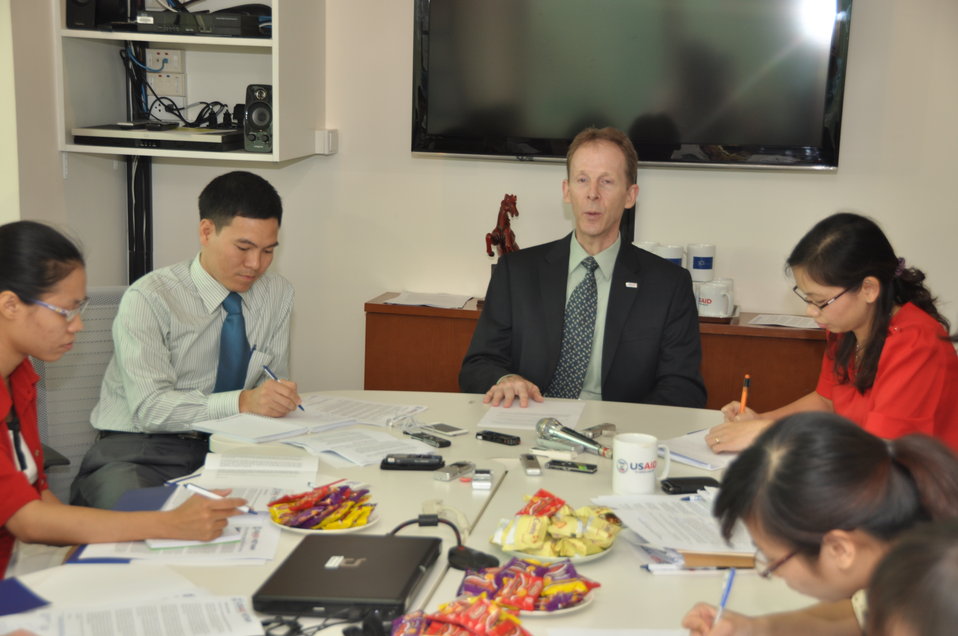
USAID Mission Director Joakim Parker announces climate change awards

October 17, 2012